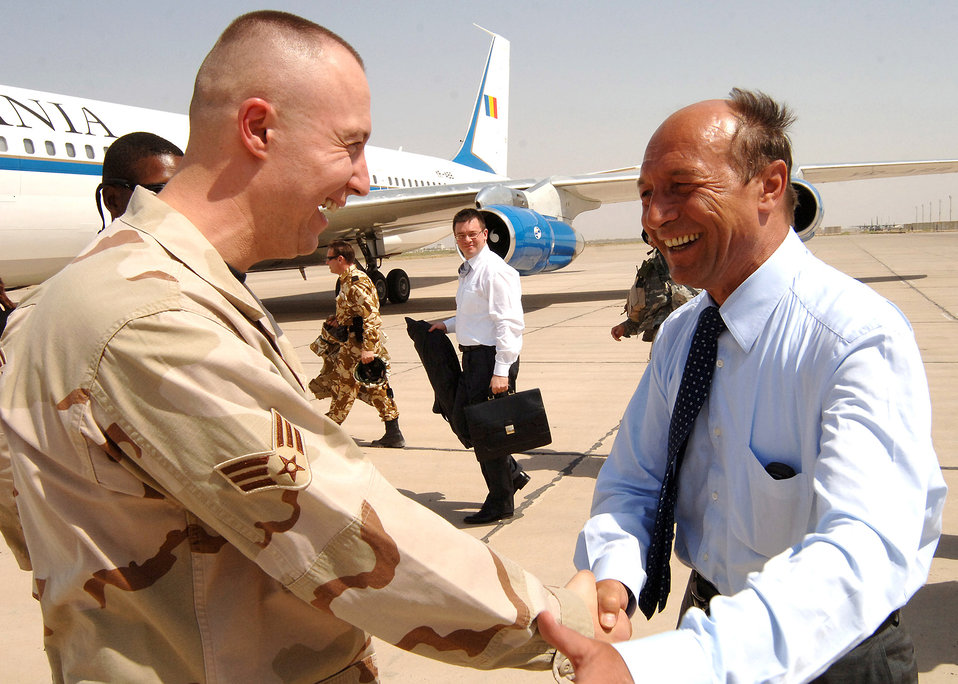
Homeland reunion

Senior Airman Dan Visan shakes hands with Romanian president Traian Basescu during the president's visit to Baghdad Aug. 9. Airman Visan immigrated to the United States in 2000 from Timisoara, Romania, and was ecstatic to meet the Romanian president. Airman Visan is a force protection escort and has been able to use his bilingual abilities in his duties with third-country nationals at Sather Air Base, Iraq. He joined the Air Force in 2004 and is a dental technician at Scott Air Force Base, Ill.